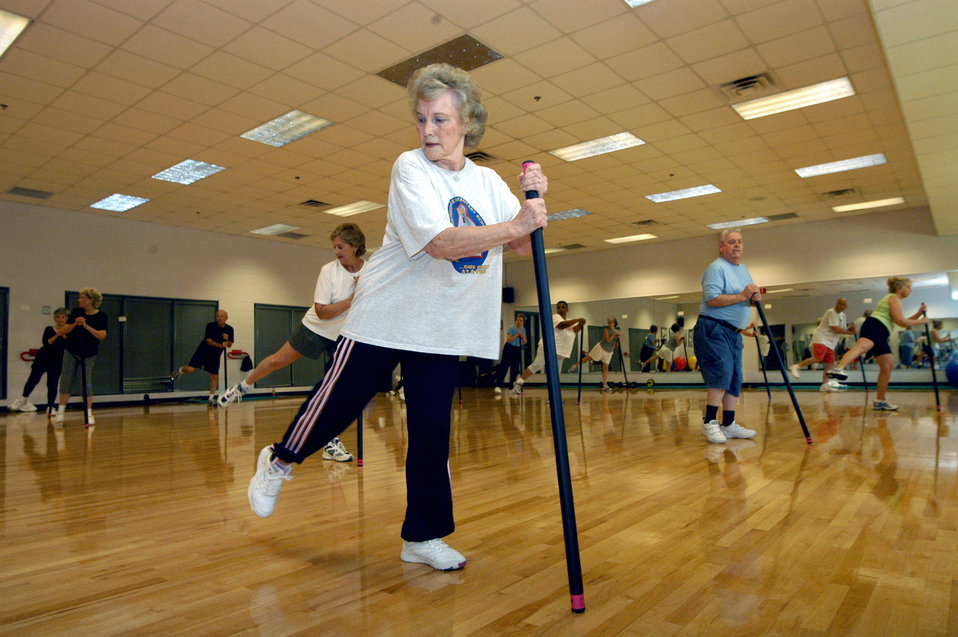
Kicking, punching their way to health

ROBINS AIR FORCE BASE, Ga. -- Bobbie Dixon (foreground) uses an exercise pole while doing Tae Bo at the fitness center here May 10. The senior Tae Bo class incorporates boxing moves into a high-energy aerobics routine, modified with balancing poles to ensure participants' safety.